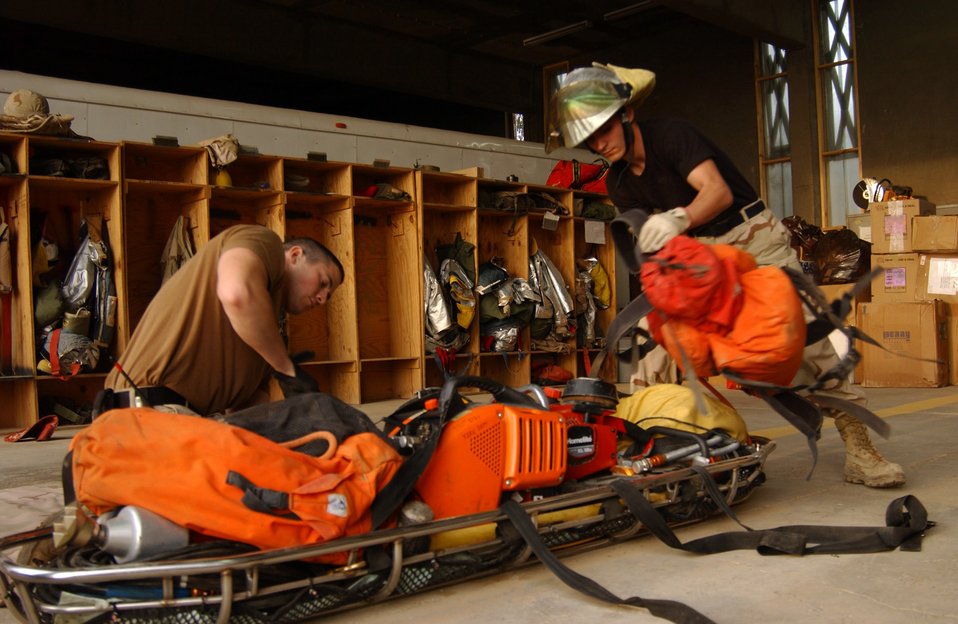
Fire department

BALAD AIR BASE, Iraq (AFPN) -- Airman 1st Class Nathan Shaw and Senior Airman John Armstrong inventory 350 pounds of extrication tools. Both Airmen are assigned to the 332nd Expeditionary Civil Engineering Squadron Fire Prevention Flight.